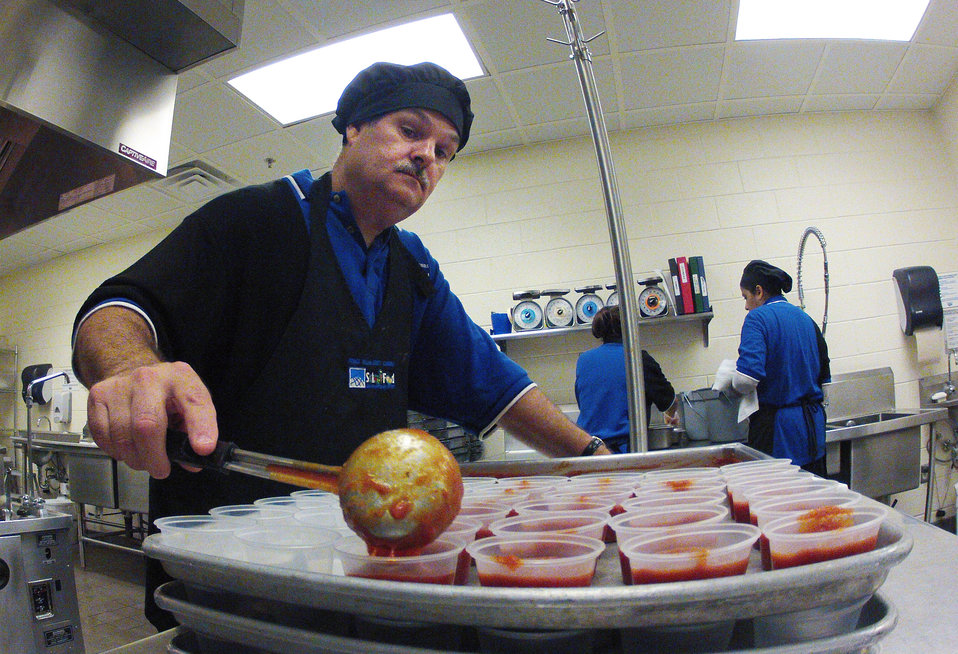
School lunch staff and students enjoy the new school lunch menu created to meet the new standards at the Yorkshire Elementary School in Manassas, VA on Friday, Sept. 7, 2012.